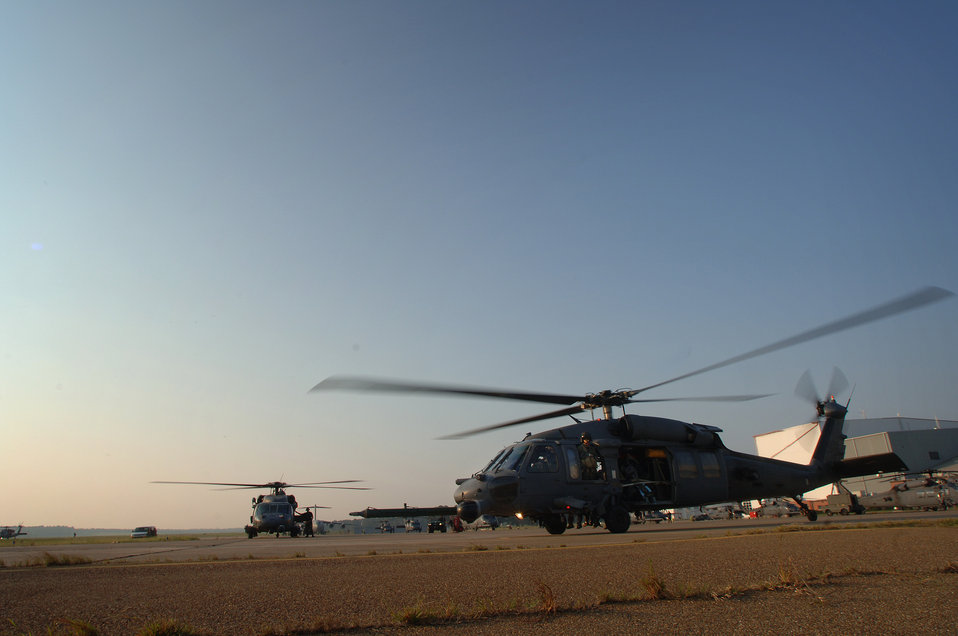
Airmen 'pave' way for help

JACKSON, Miss. -- HH-60G Pave Hawk helicopter aircrews continue to fly search-and-rescue missions from here hoping to find stranded victims of Hurricane Katrina's devastating aftermath. As of Sept. 7, the rescue operation here has extracted more than 4,000 people trapped by flood waters.